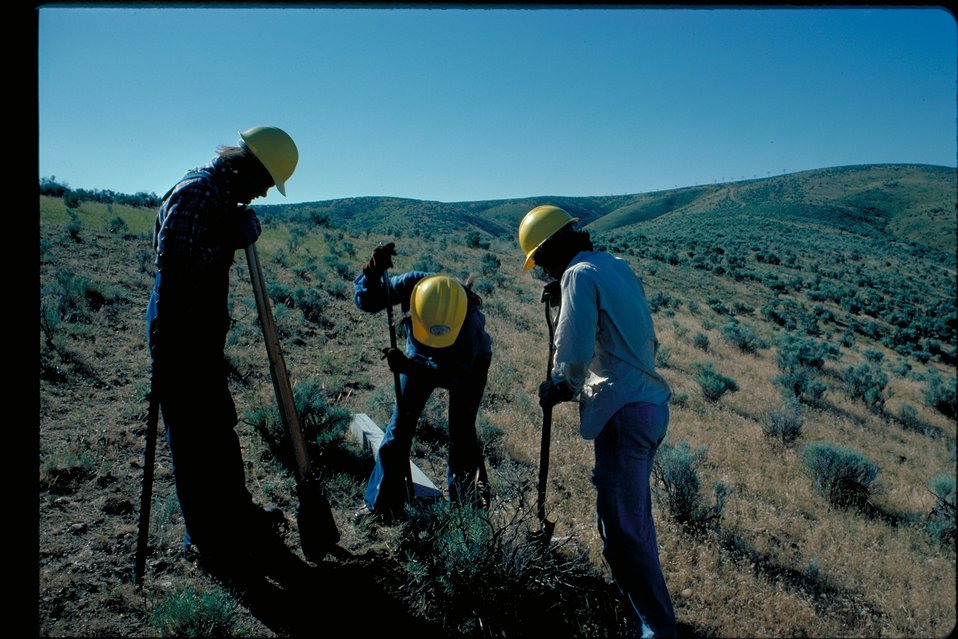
YCC Placing Oregon Trail Monuments Oregon Trail Lower Snake River District